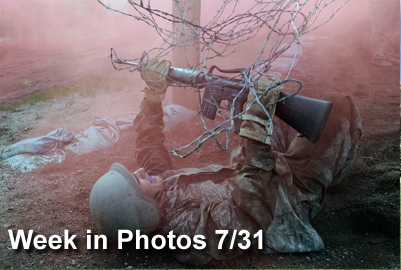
Week in Photos

Air Force Week in Photos for July 31 highlights photos from around the Air Force. In this photo by Mike Kaplan, Air Force Academy Basic Cadet Evan Rowley inches his way under barbed wire in the Jacks Valley Assault Course July 21 near Colorado Springs, Colo.